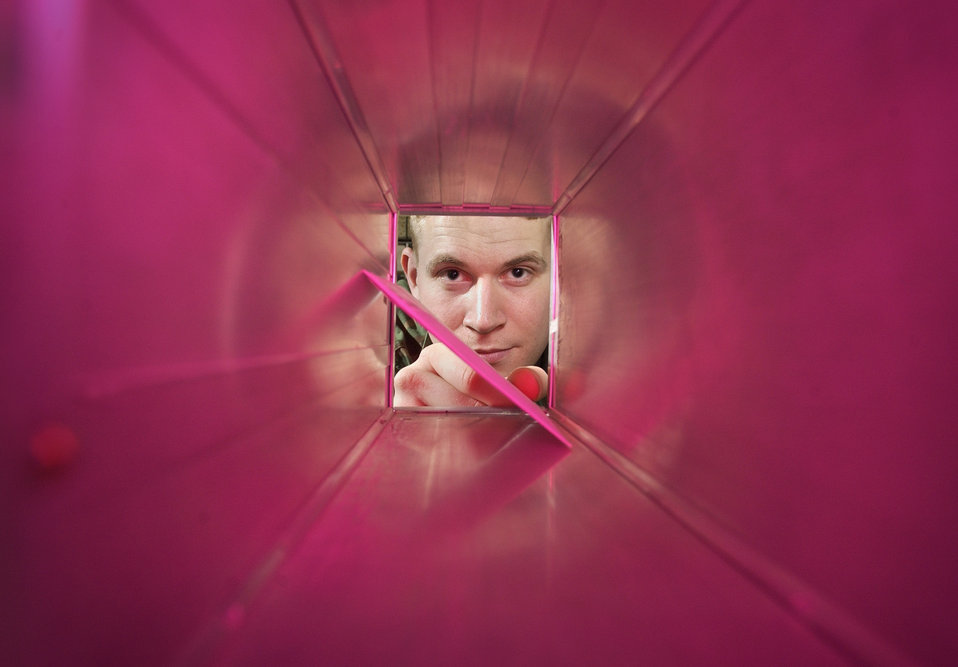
Be the mail

SPANGDAHLEM AIR BASE, Germany -- Senior Airman Austin Murphy places a letter in a mail box receptacle for the addressee here recently. Airman Murphy is a postal Airmen with the 52nd Communications Squadron.